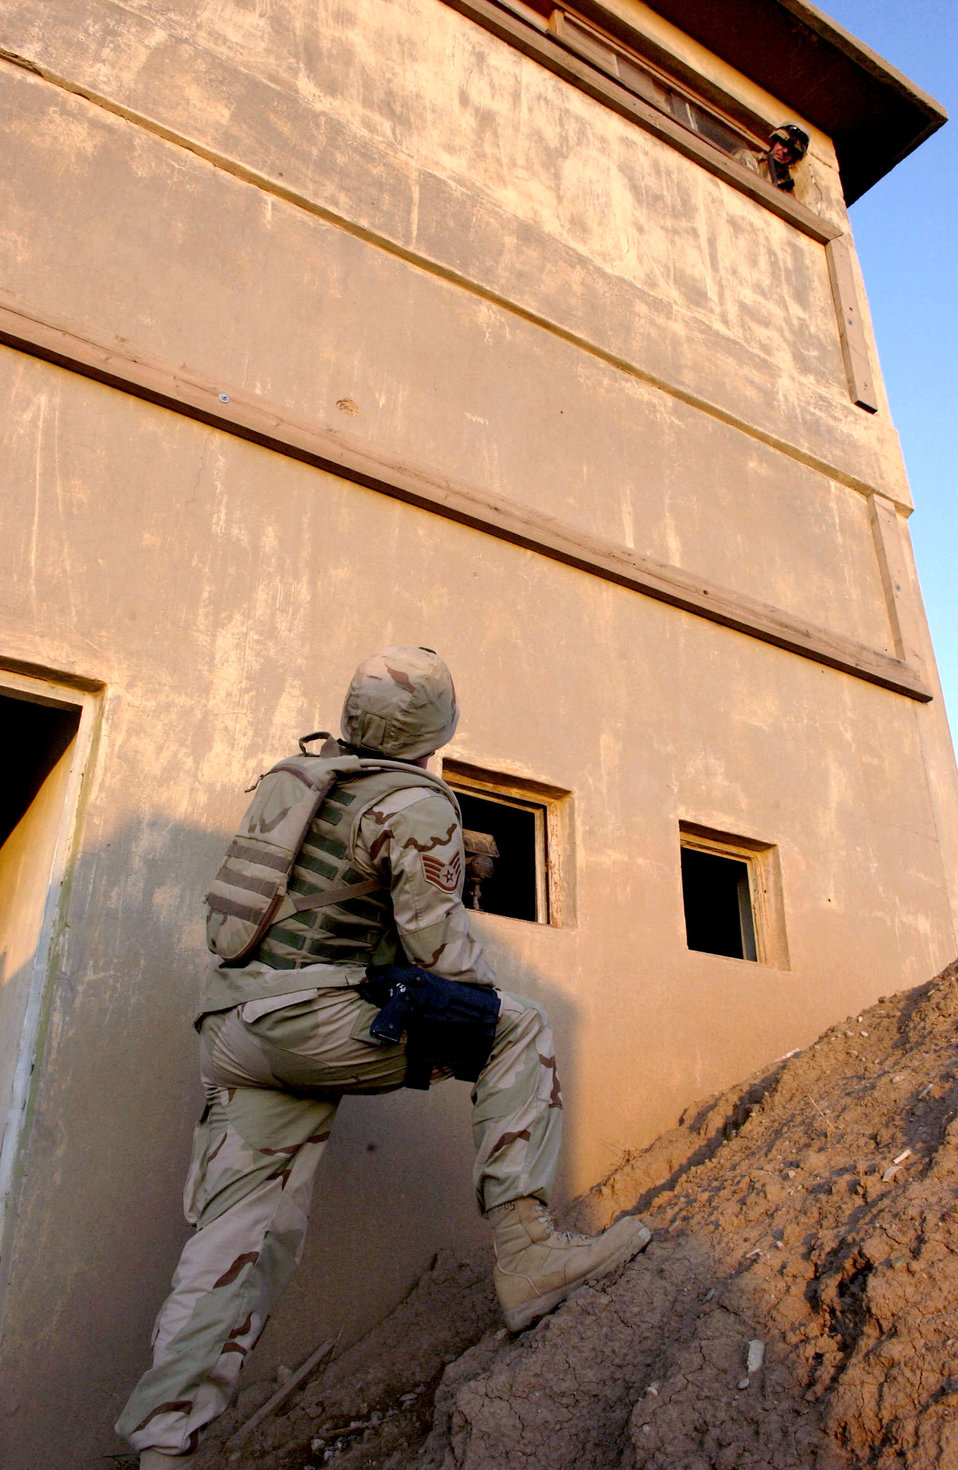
Sentry guards

Staff Sgt. Peter Casola tells Senior Airman Michael Williams